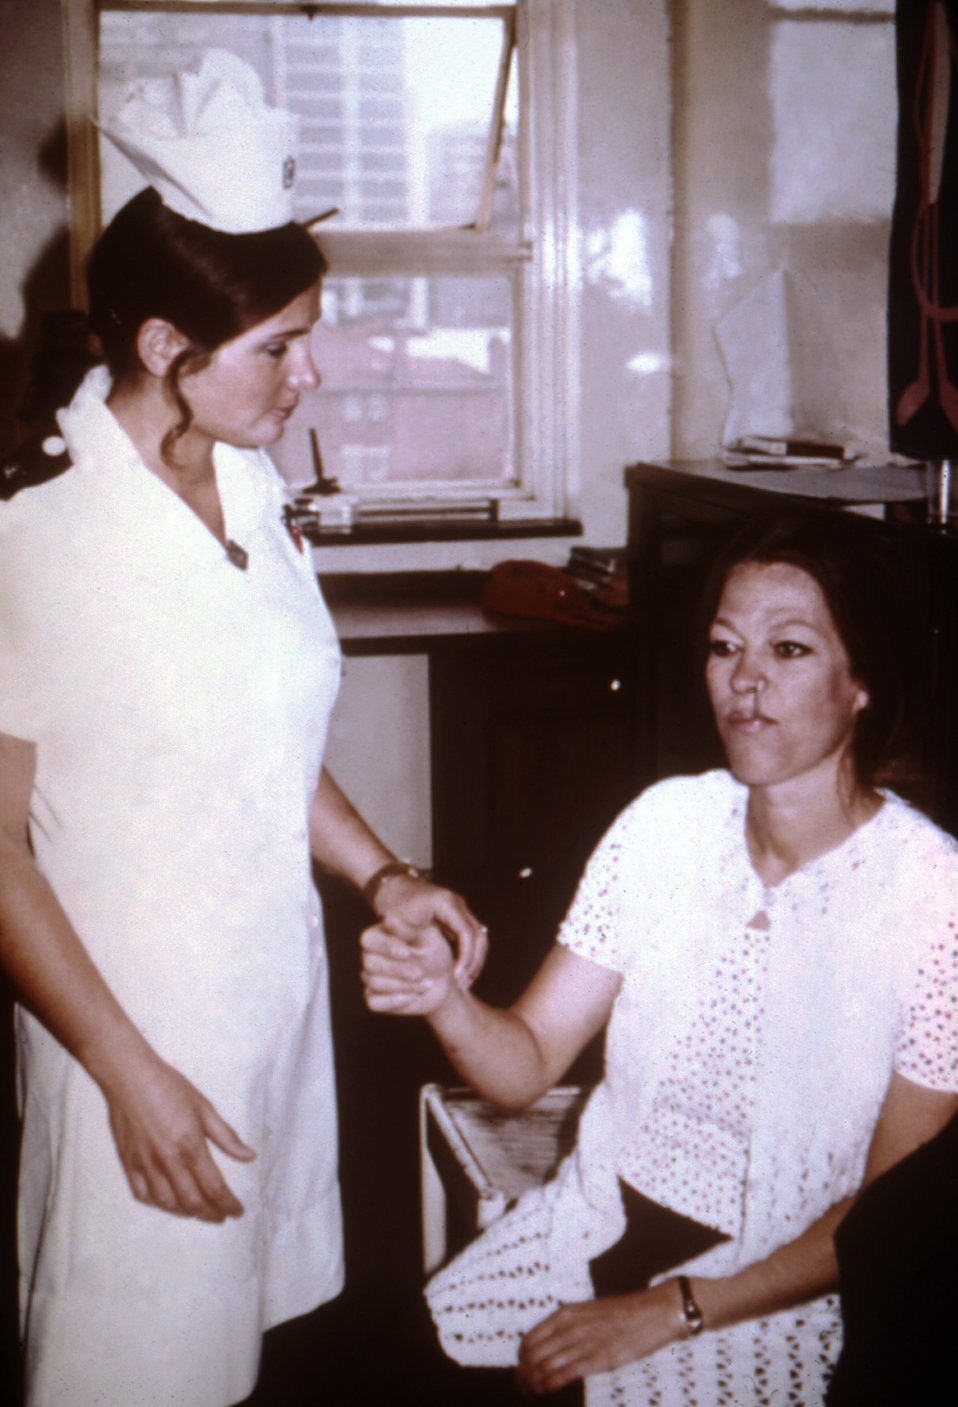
This Johannesburg hospital nurse was photographed while checking the vital signs of an isolated hospital staff member after patients with Marburg virus infections were treated there in 1975.